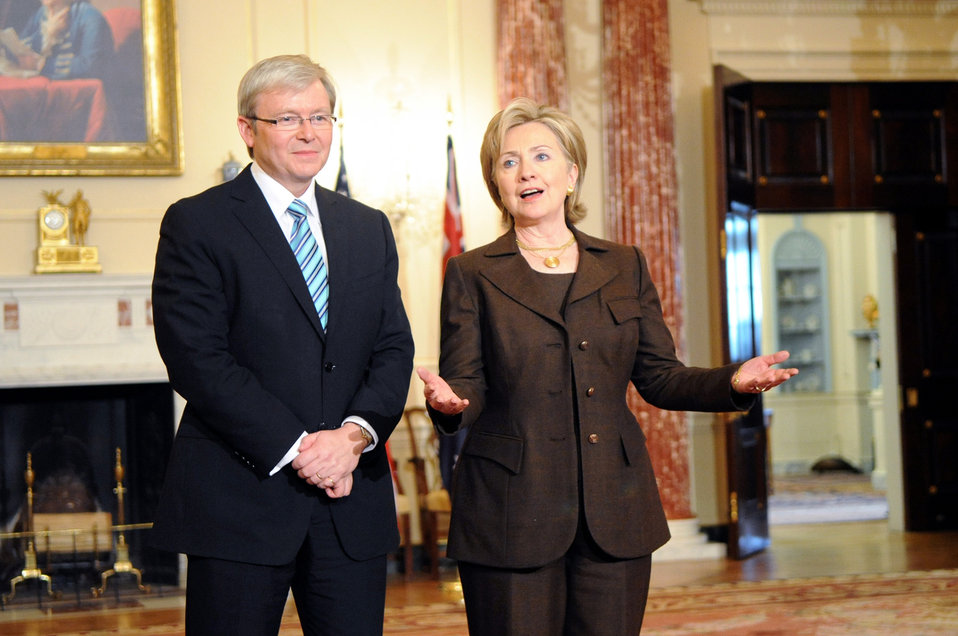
Secretary Clinton Meeting With Australian Prime Minister

U.S. Secretary of State Hillary Rodham Clinton during a meeting with Australian Prime Minister Kevin Michael Rudd in Washington, DC March 24, 2009.